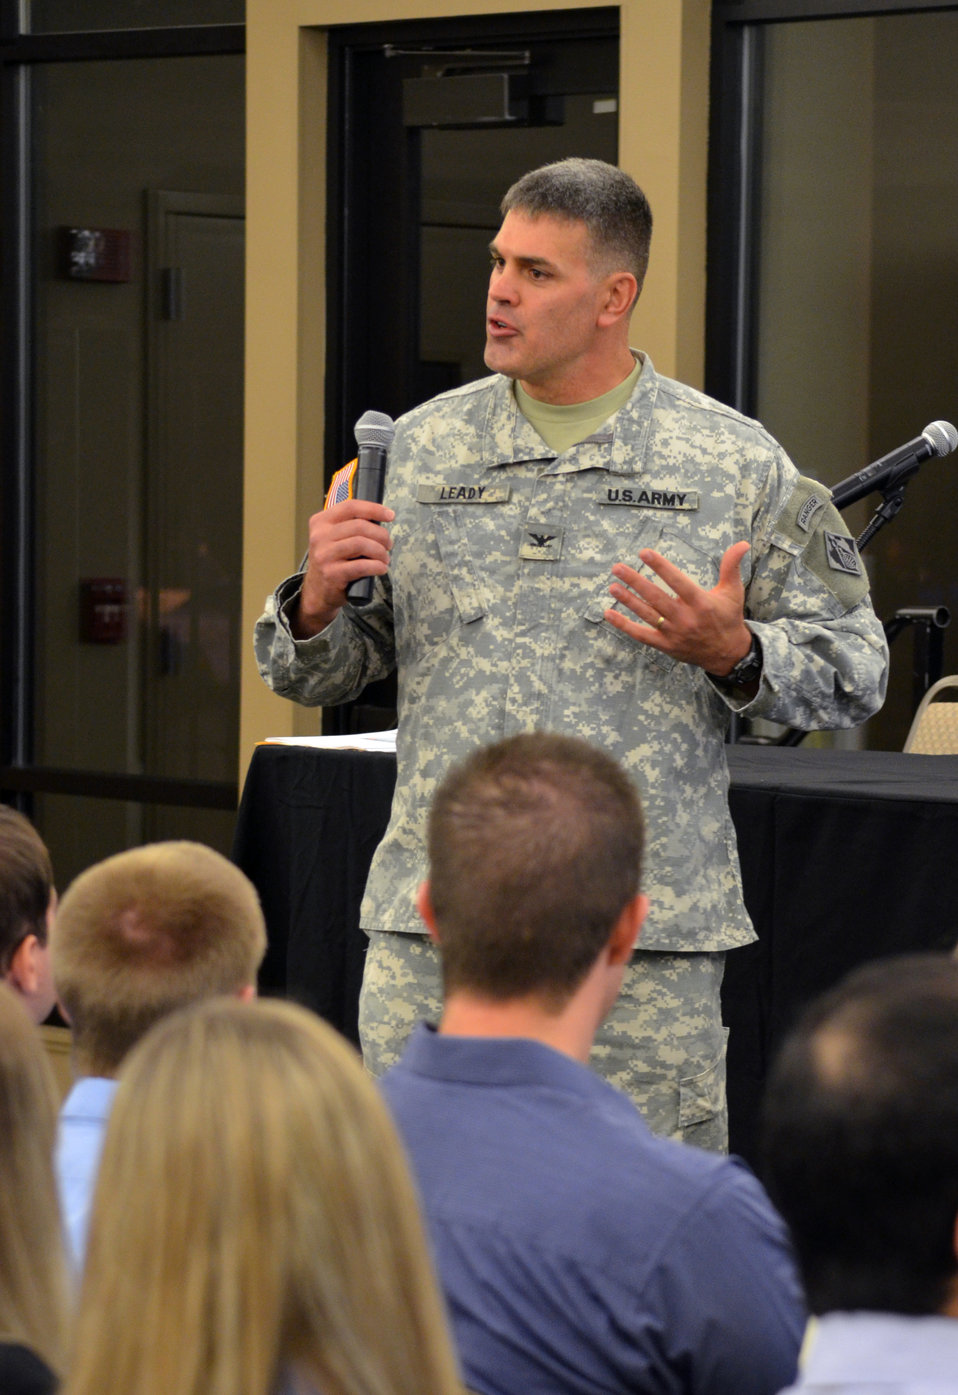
Corps engineers showcase federal jobs to students at Career Fair

Colonel Bill Leady, commander of the U.S. Army Corps of Engineers Sacramento District, speaks to students and faculty at the California State University-Sacramento’s career fair Nov. 3, 2011 in Sacramento, Calif. Leady was the keynote speaker for the event, aimed at students in engineering fields, and spoke about job opportunities with the Corps. “America needs engineers,” Leady said to the students during his speech. “America needs you.”